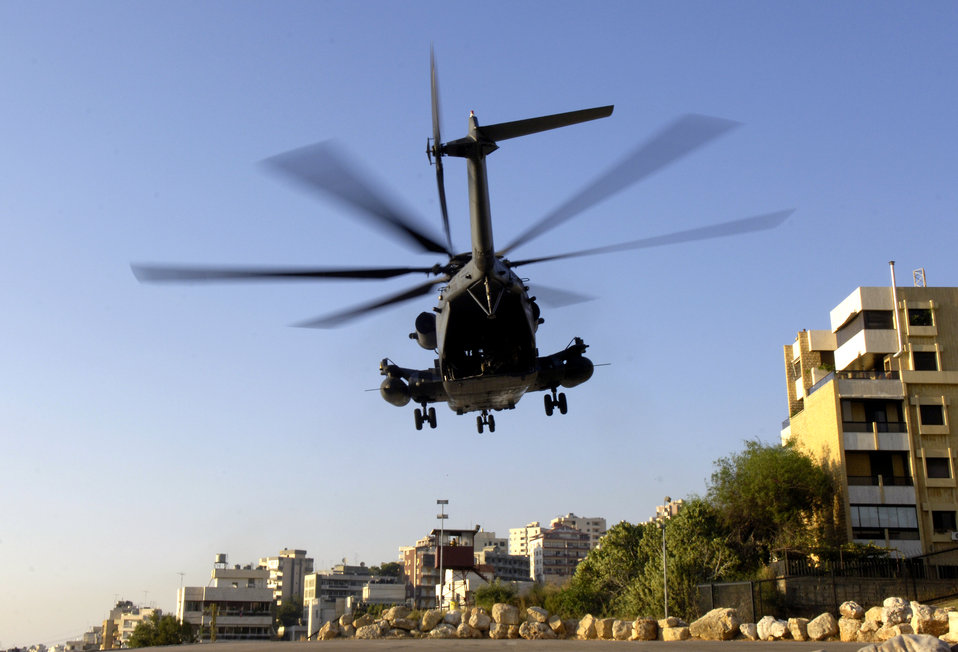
Lebanon operations

BEIRUT, Lebanon (AFPN) -- An MH-53M Pave Low helicopter lands at the U.S. Embassy here July 24. The helicopter flew in to pick up American citizens and transport them to Cyprus. The helicopter is with the 352nd Special Operations Group at Royal Air Force Mildenhall, England.